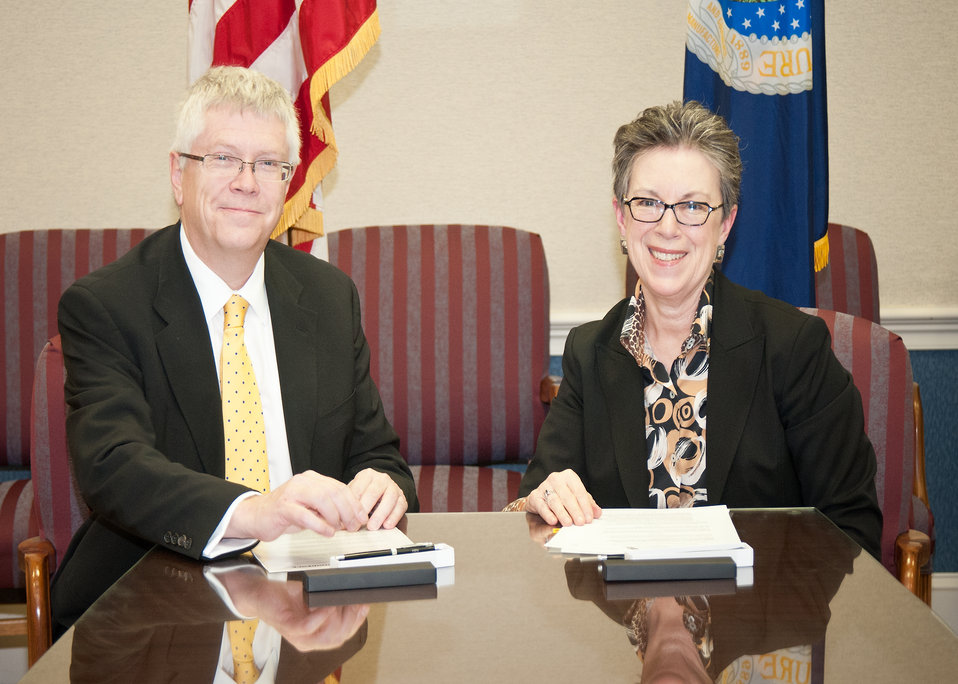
Trevor Nichols (left), Chief Executive Officer, Centre for Agricultural Bioscience CABI-Plantwise and Dr. Catherine Woteki (right), Undersecretary, Research Education and Economics signed a Memorandum of Understanding to make the United States Department of Agriculture’s research and genetic information accessible to “plant doctors” working to prevent disease and pests in developing countries at the United States Department of Agriculture in Washington, D.C., on Tuesday, February 7, 2012. In collaboration with local organizations, Plantwise has formed a network of 182 “plant clinics” in 16 countries around the world. Through the USDA-Plantwise partnership, the “plant doctors” at these clinics will have easier access to USDA research and education in order to help farmers in developing countries diagnose and control the plant pests and diseases affecting their fields.